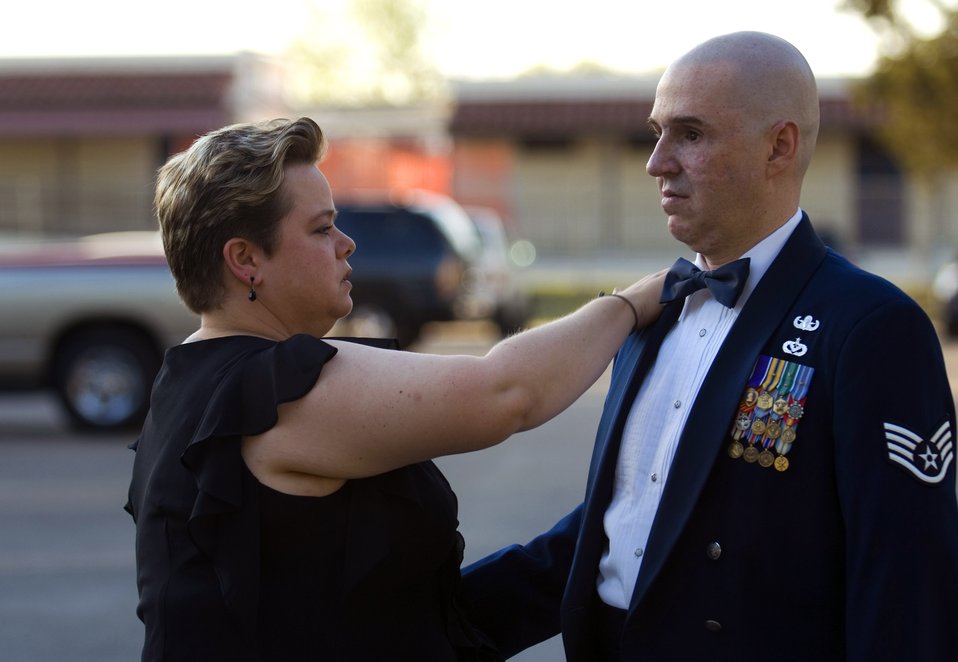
Wounded Warrior: Air Force family helps Purple Heart recipient, wife

Annette Slaydon adjusts her husband's uniform prior to renewing their marriage vows April 12 at Randolph Air Force Base, Texas. Staff Sgt. Matthew Slaydon was critically wounded by a terrorist bomb in Iraq in October 2007 -- losing his sight, one arm, and suffering multiple facial lacerations and fractures. In addition to Mrs. Slaydon's support to her husband, the Air Force has helped the couple in many ways since Sergeant Slaydon was wounded.